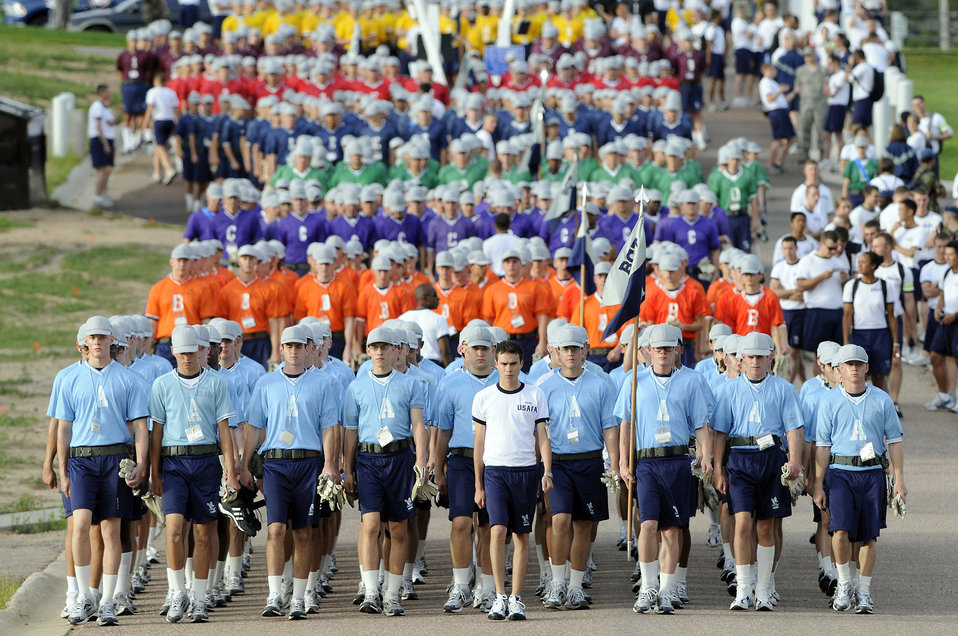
Class of 2013 Field Day

Basic cadet trainees with the U.S. Air Force Academy's Class of 2013 march to the athletic fields during Field Day activities here today. About 1,344 trainees competed in various athletic events during Field Day, including tug
of war, log relays, steeple chase and sprint relays. Basic cadet training started June 25 and continues through Aug. 1. The new cadets are in their first month of training and are learning about Air Force heritage, honor, discipline and Air Force core values, in addition to improving physical
fitness. The fall academic semester begins Aug. 6.